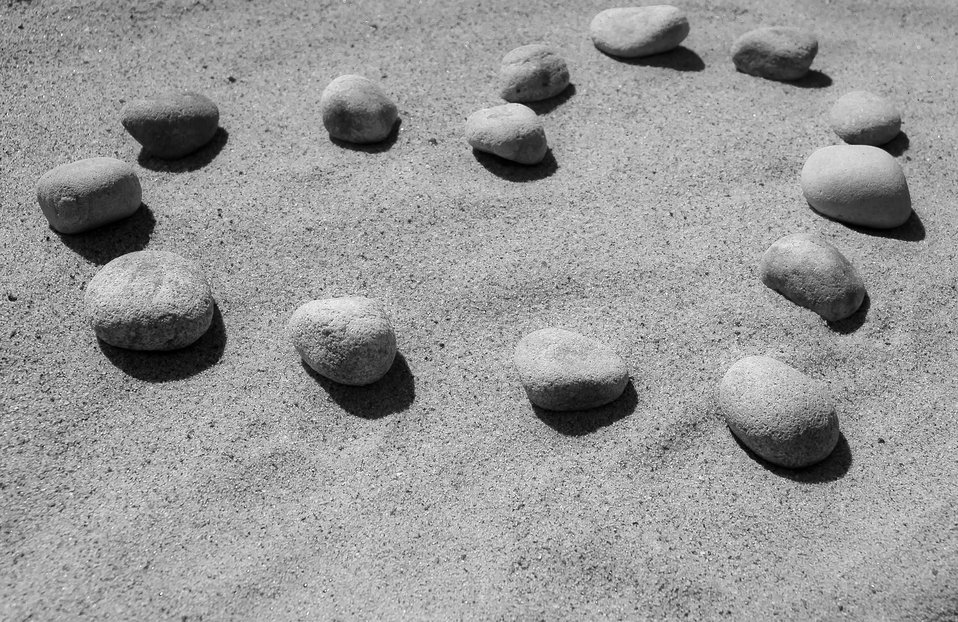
Heart of love.